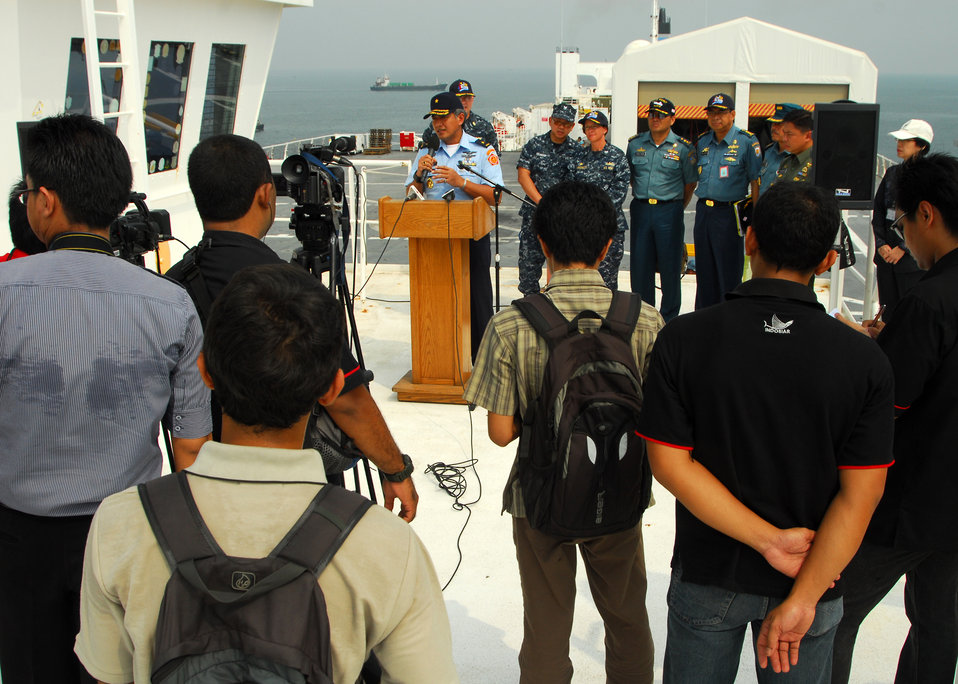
Tentara National Indonesia Surgeon General Marsekal Muda Mariano Delivers Remarks During a Media Availability Tour

Tentara National Indonesia Surgeon General Marsekal Muda Mariano gives remarks during a media availability tour aboard the Military Sealift Command hospital ship USNS Mercy (T-AH 19) during Pacific Partnership 2010 on July 7, 2010. Mercy is en route to its first stop in Indonesia during the fifth in a series of annual U.S. Pacific Fleet humanitarian and civic assistance endeavors to strengthen regional partnerships.